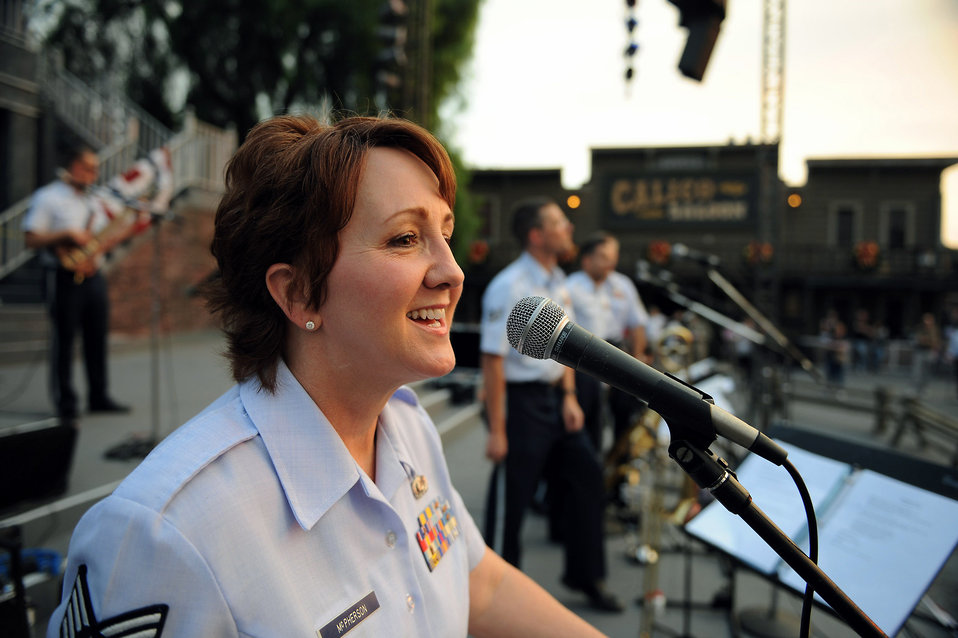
Bands spread Air Force message through music

Staff Sgt. Erin McPherson sings at Knott's Berry Farm Nov. 15 in Los Angeles. Sergeant McPherson is a vocalist of the Air National Guard Band of The Southwest. The band is performing during Air Force Week Los Angeles, which is an event designed to educate the local population about the Air Force's capabilities and missions through various activities and exhibitions all over the Los Angeles area.